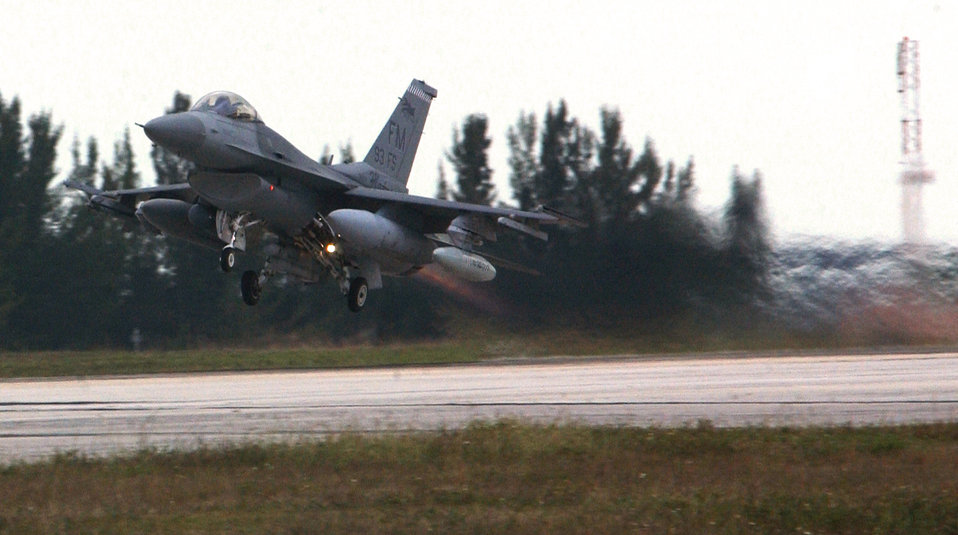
Reserve, active-duty pilots battle for air superiority

HOMESTEAD AIR RESERVE BASE, Fla. -- An F-16 Fighting Falcon takes off from here for a dissimilar aircraft combat training mission against F-15 Eagles. The F-16s are assigned to Homestead's 93rd Fighter Squadron, and the F-15s are from the 58th FS at Eglin Air Force Base, Fla.